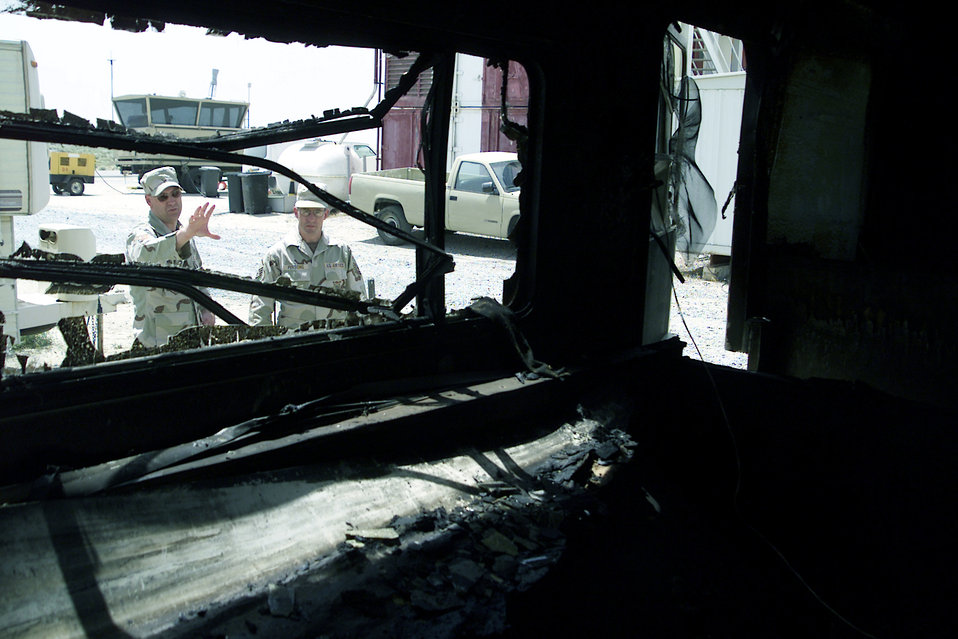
Trailer fire

SOUTHWEST ASIA -- Tech. Sgt. Jerry Theriot (left) and Master Sgt. Harold Persons examine the burned out wreckage of a trailer that recently caught fire at a forward-deployed location. Both Airmen are assigned to the 386th Expeditionary Civil Engineer Squadron's fire department. Sergeant Theriot is the chief of fire prevention and is deployed from the 4th Civil Engineer Squadron at Seymour Johnson Air Force Base, N.C. Sergeant Persons is the assistant chief of fire department operations and is deployed from the 97th CES at Altus AFB, Okla.